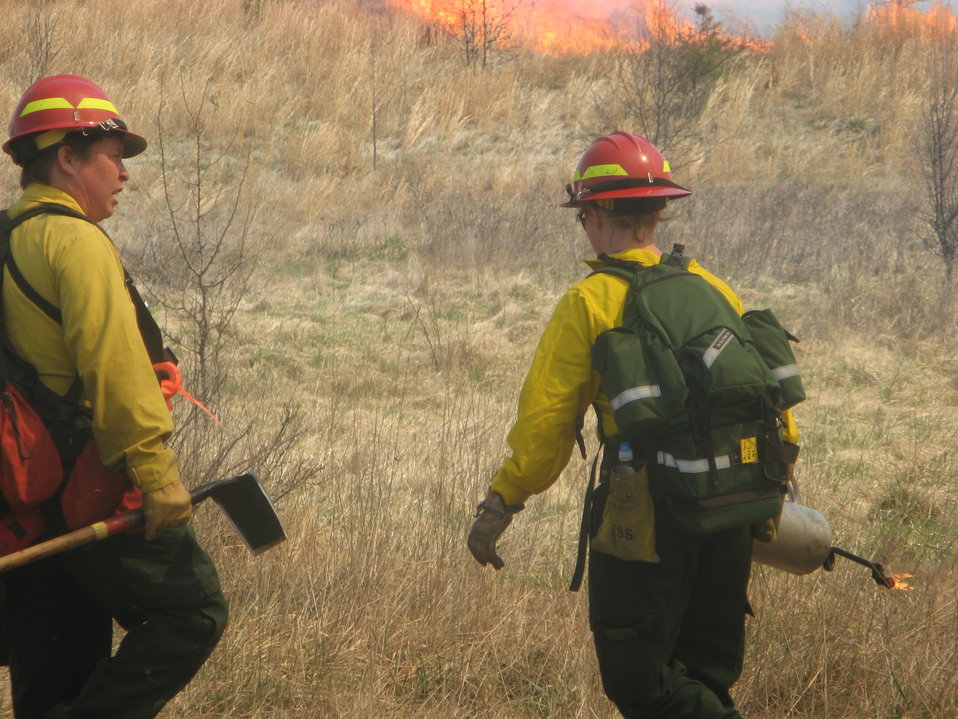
Firing controlled burn

Laurel, MD: Firefighters light a controlled burn with drip torches at Patuxent National Research Refuge to maintain habitat for grassland birds.